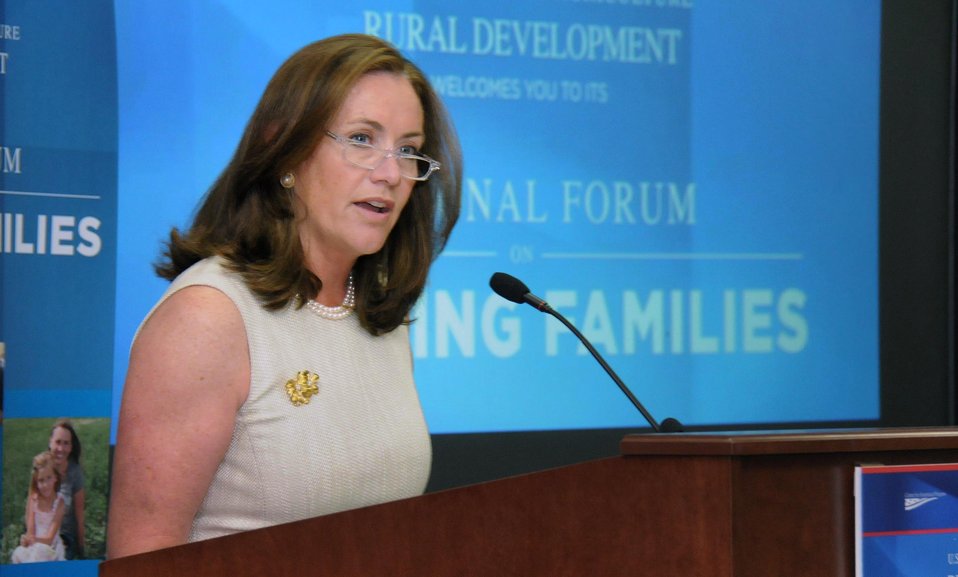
Virginia First Lady Dorothy McAuliffe speaks to stakeholders, government and regional leaders to identify initiatives for working families and businesses in rural areas at the White House Summit on Working Families in Petersburg, VA on Wednesday, Jun. 11, 2014. This forum is part of a series of regionally hosted conversations leading up to the Jun. 23, 2014, White House Summit on Working Families.